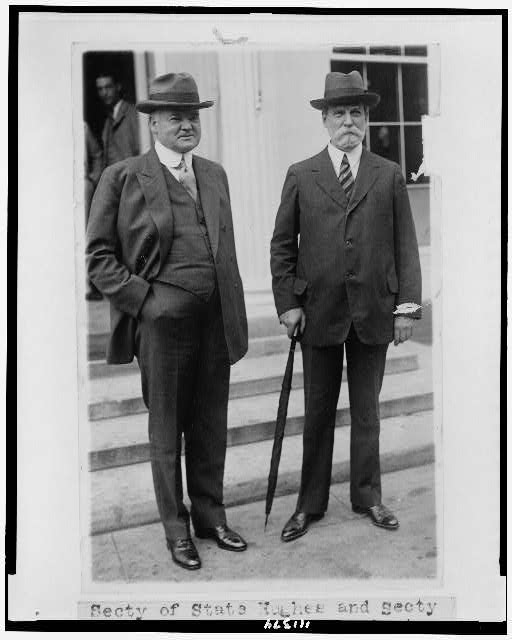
Charles Evans Hughes and Herbert Hoover

Secretary of State Charles Evans Hughes with Secretary of Commerce Herbert Hoover (1924).